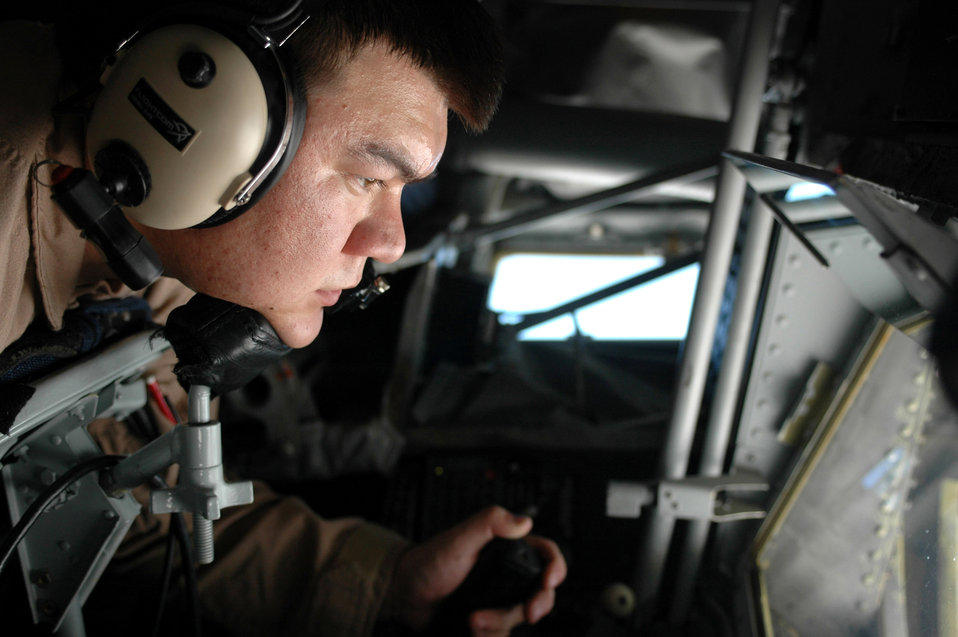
Pulling up to the pump

Airman 1st Class Larry Hamel refuels an F-16 Fighting Falcon from a KC-135 Stratotanker over central Iraq May 19. Airman Hamel is a 340th Expeditionary Air Refueling Squadron boom operator deployed from Fairchild Air Force Base, Wash. The KC-135's principal mission is air refueling. This unique asset greatly enhances the Air Force's capability to accomplish its primary missions of global reach and global power. Nearly all internal fuel can be pumped through the flying boom, the KC-135's primary fuel transfer method.